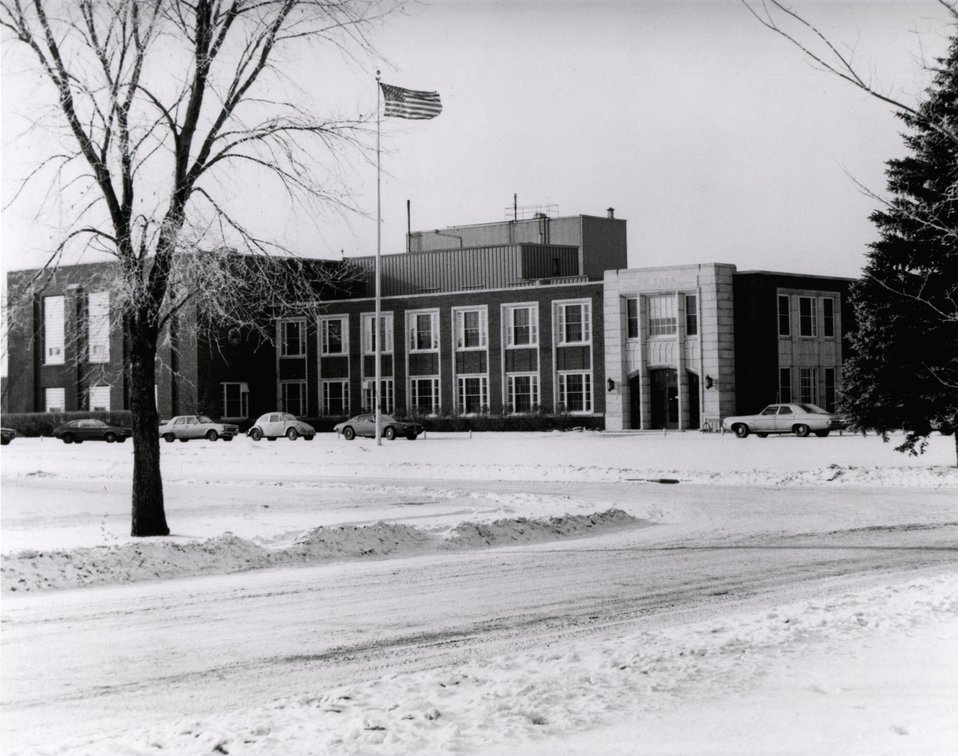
An interior view of the 25 ton per day fixed-bed coal gasification pilot plant at the Energy Research and Development Administration's Grand Forks Energy Research Center in North Dakota. Circa 1976.